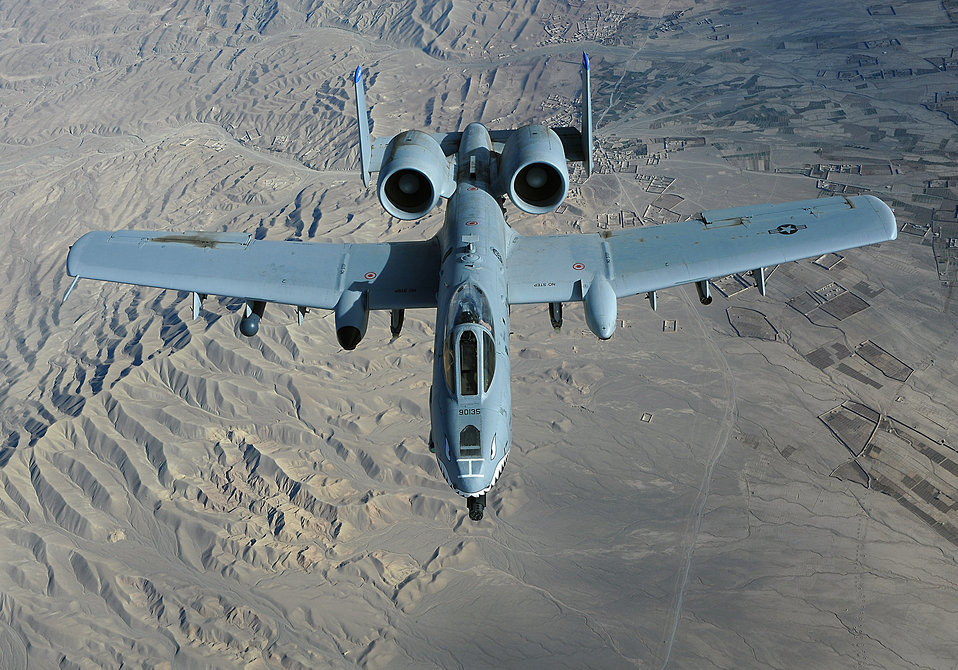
Dec. 16 airpower summary: A-10s conduct shows of force

An A-10 Thunderbolt II conducts show of force over Afghanistan in support of Operations Enduring Freedom. A-10s fly combat patrol missions to deter anti-Afghan activities and provide armed aerial overwatch.